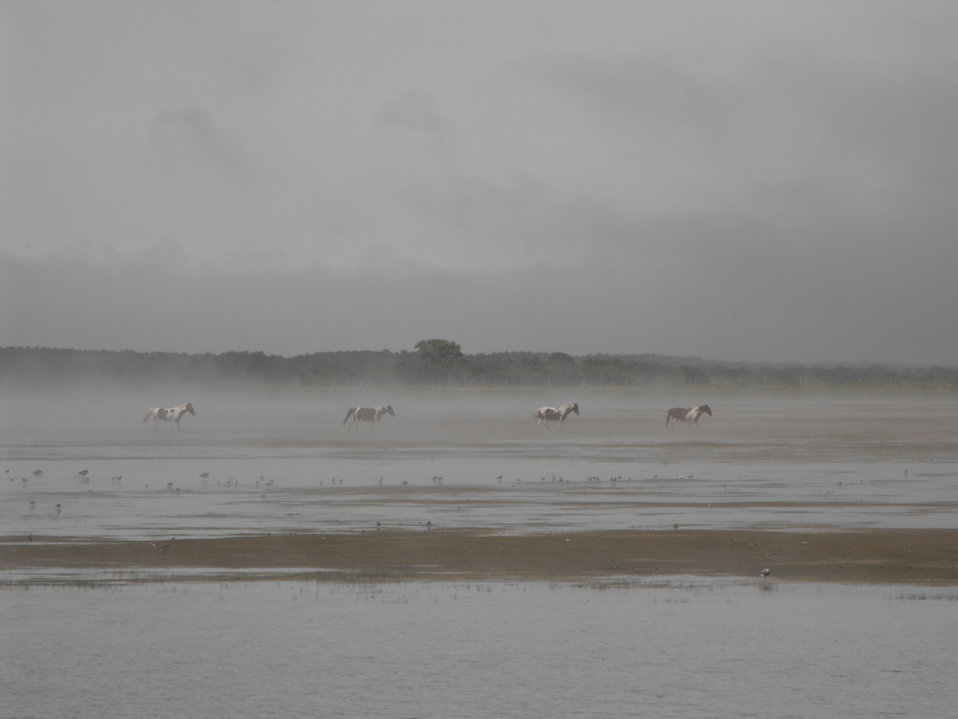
Ponies in the mist at Chincoteague National Wildlife Refuge / Assateague Island National Seashore.